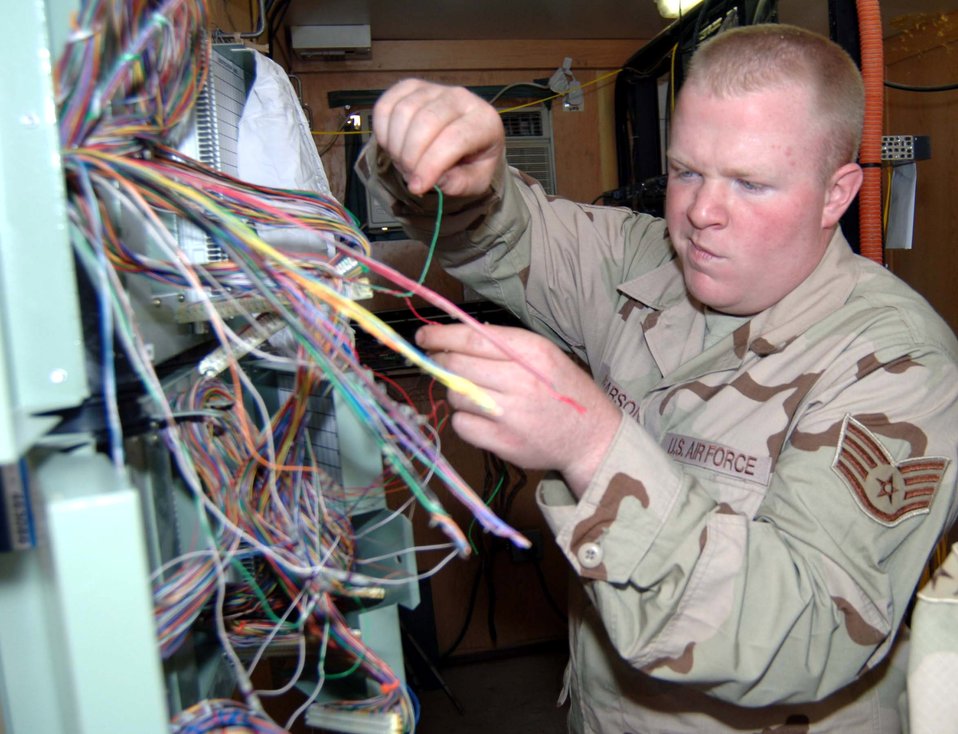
Cable techs bring copper, fiber to table

Staff Sgt. Matthew Pearson splices copper wires used for phone lines at Sather Air Base, Iraq. The cable he is splicing contains 400 wires, each requiring individual attention. Sergeant Pearson is a cable and antenna technician assigned to the 447th Expeditionary Communication Squadron.